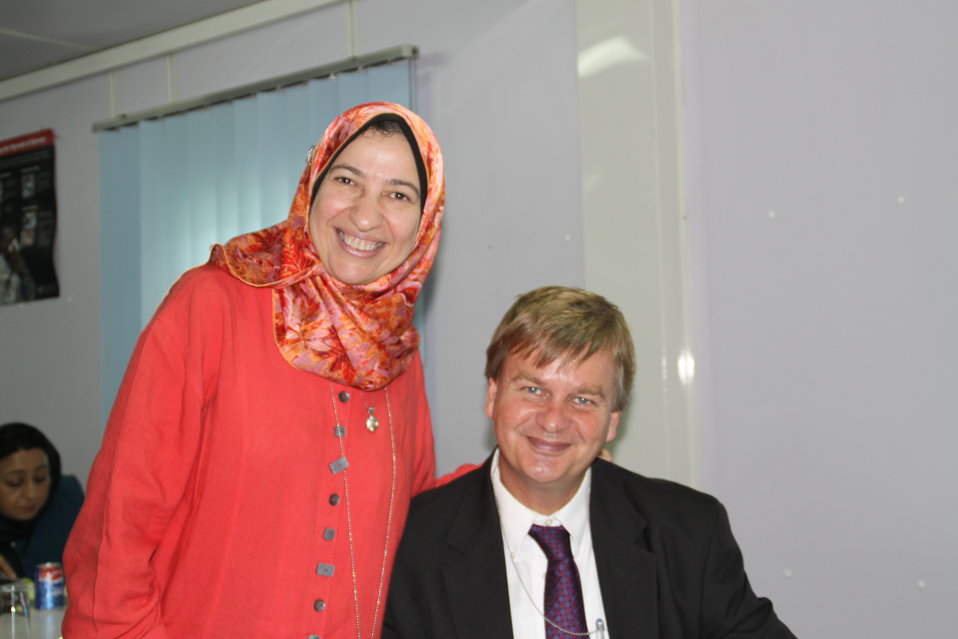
105 MW Tarakhil Power Plant Handover